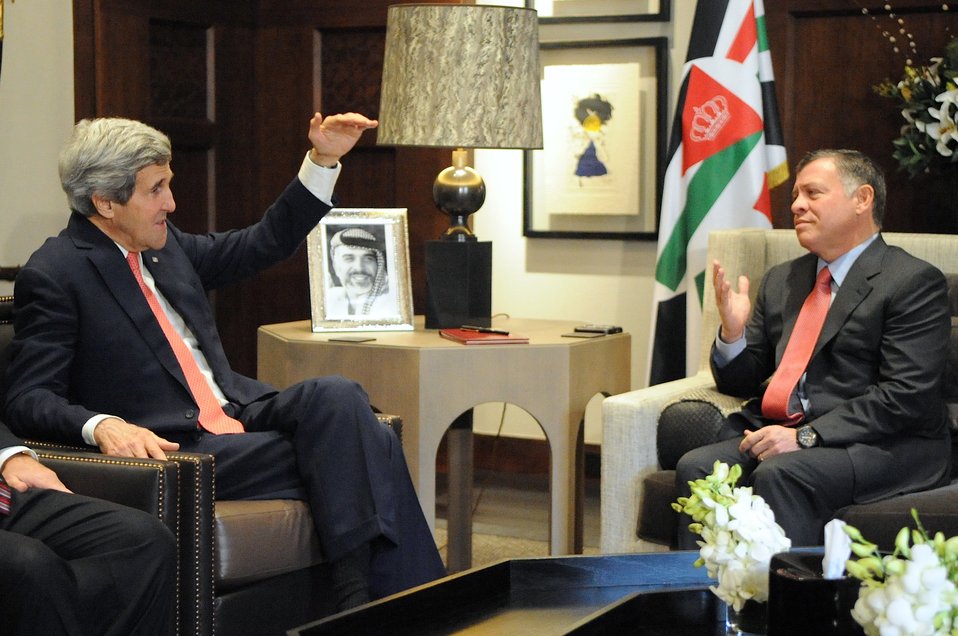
Secretary Kerry Meets With King Abdullah II

U.S. Secretary of State John Kerry and King Abdullah II of Jordan commiserate about how quickly children grow up before they meet in Amman on January 5, 2014, to discuss Middle East negotiations.